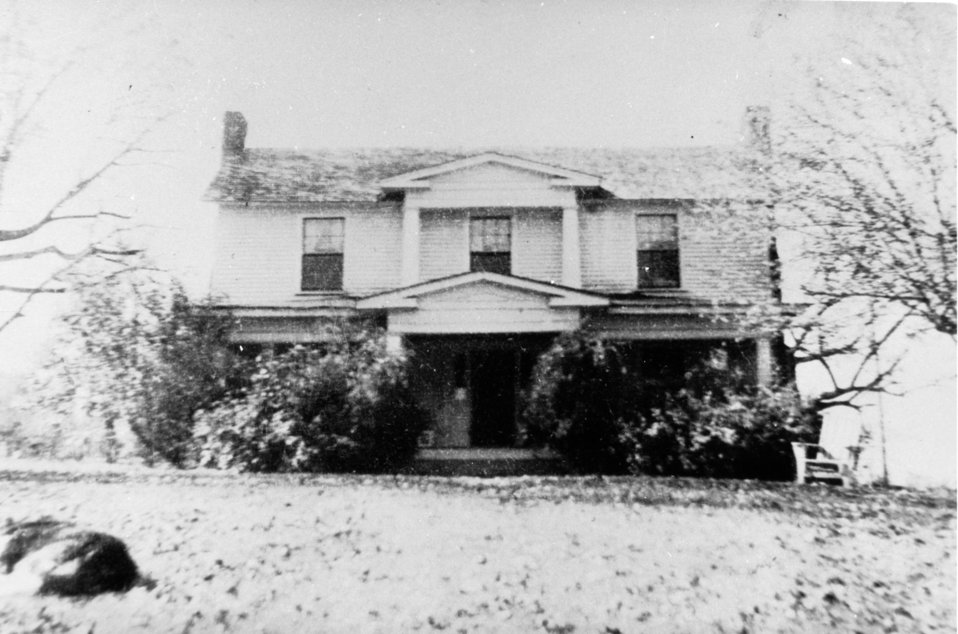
Early settlers at Oak Ridge